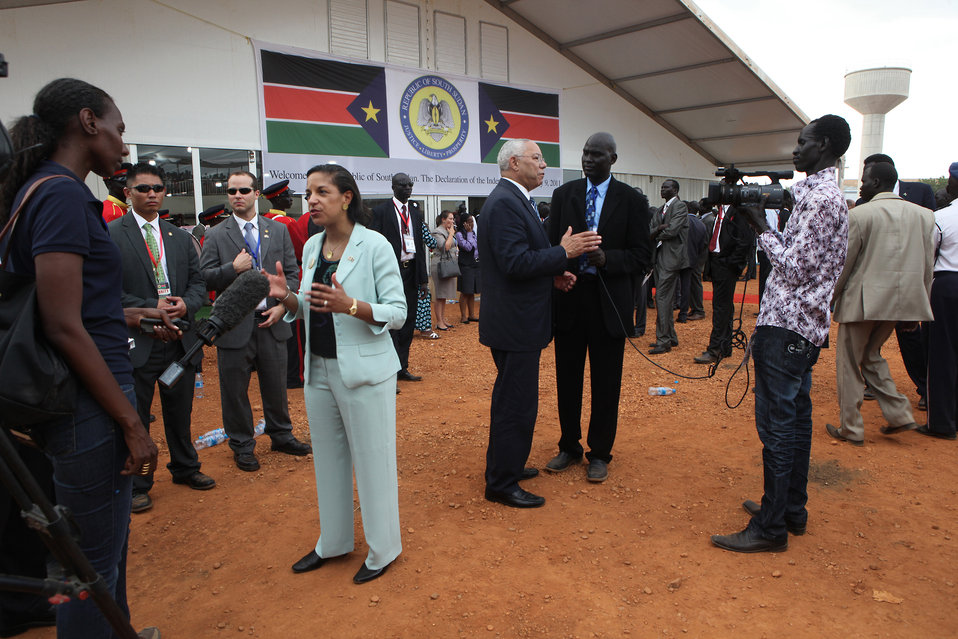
South Sudan Independence Day

Ambassador Susan E. Rice, U.S. Permanent Representative to the United Nations, speaks to CNN International, while Ret. General Colin Powell, former Secretary of State, speaks to South Sudan Television (SSTV), during the Republic of South Sudan Independence Day celebrations in Juba, South Sudan on July 9, 2011.